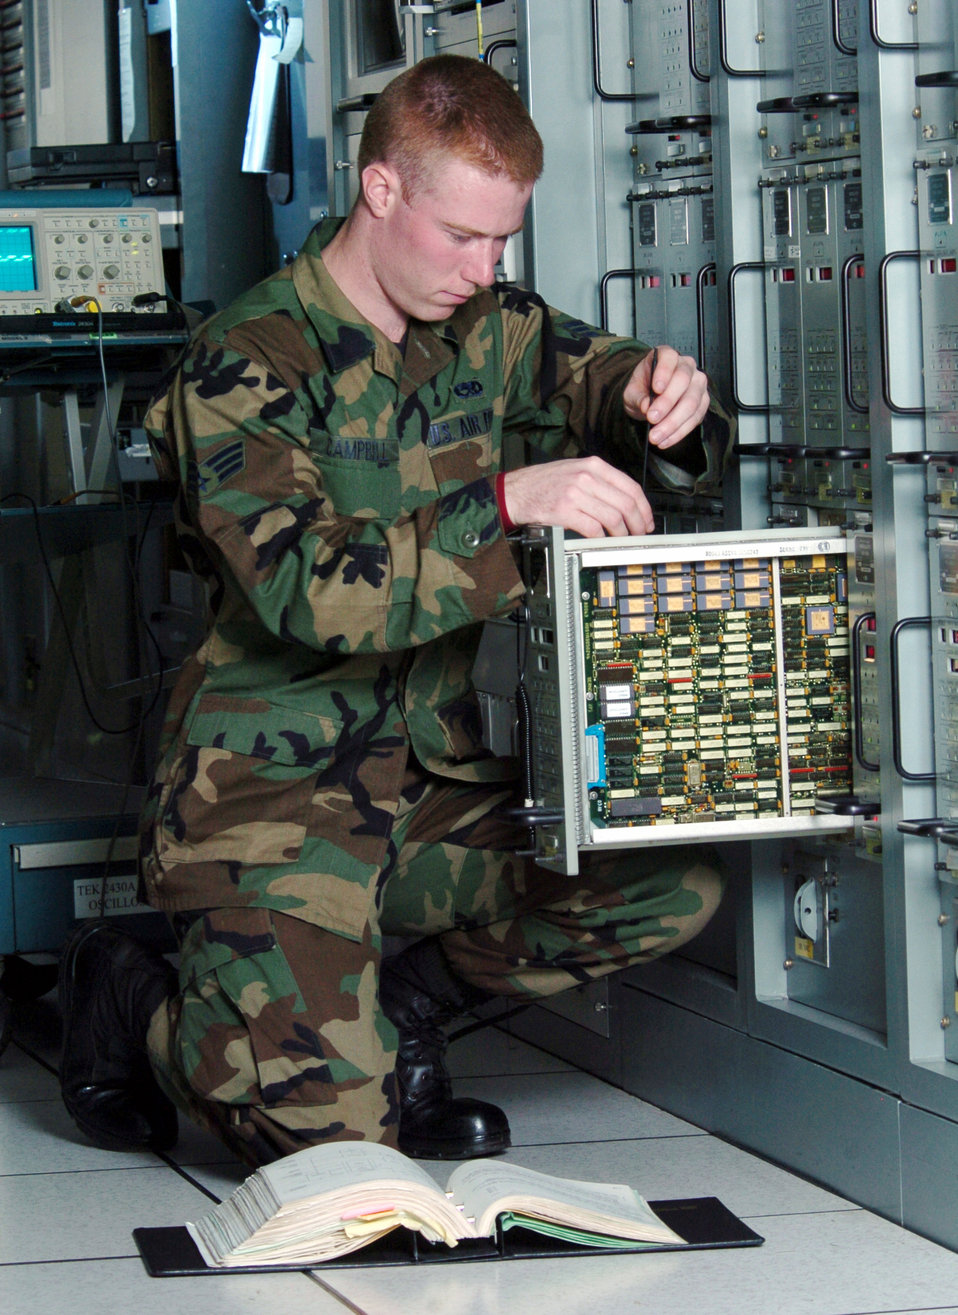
Camp Zama Airmen provide vital communications link

CAMP ZAMA, Japan -- Senior Airman James Campbell, a satellite communications journeyman, performs precision alignments on a modem demodulator circuit card. He is assigned to Operating Location C of the 374th Communications Squadron at Yokota Air Base, Japan. The Airmen in OL-C here maintain communications links for the Department of Defense and its allies in the Pacific region.